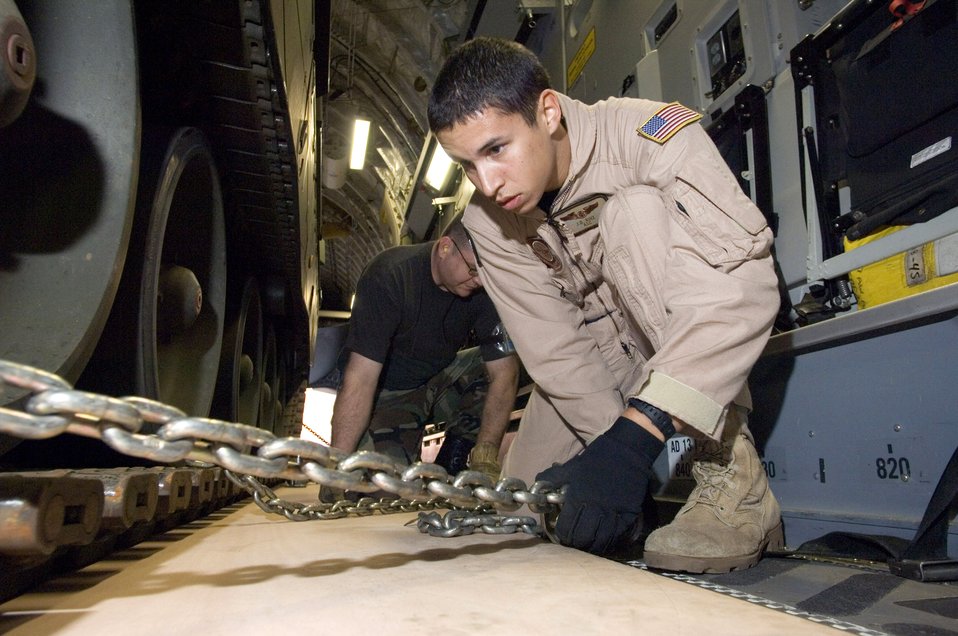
Howitzer takes flight

Airman 1st Class Joseph Ruiz fastens one of the 29 chains used to secure a 60-ton Netherlander Howitzer 2000 on a C-17 Globemaster III at Ramstein Air Base, Germany, Sept. 6. Airman Ruiz is a loadmaster with the 4th Airlift Squadron at McChord Air Force Base, Wash.